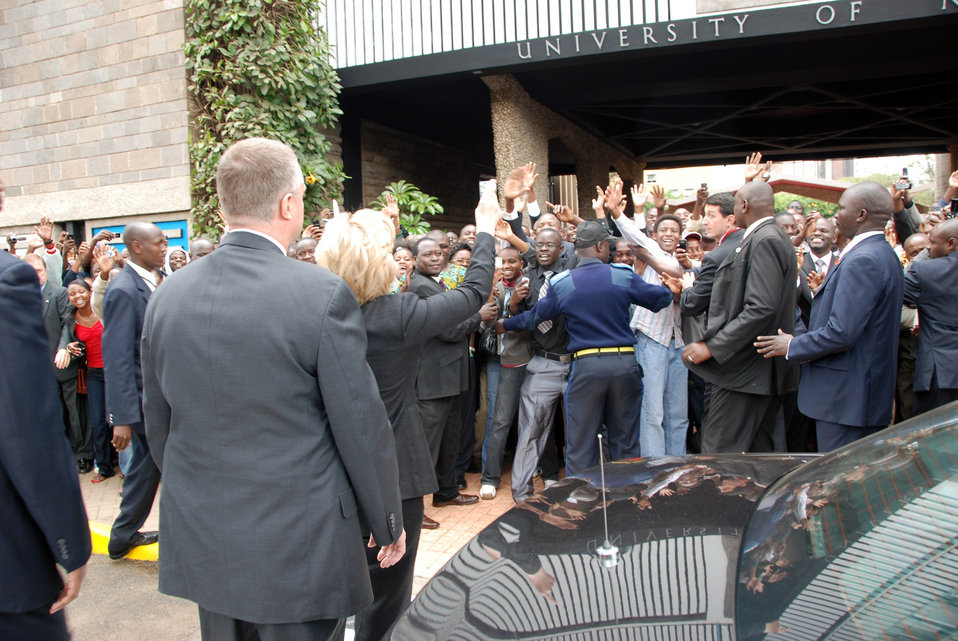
Secretary Clinton Visits Nairobi University

A cheering crowed greets U.S. Secretary of State Hillary Rodham Clinton after to a town hall meeting at the University of Nairobi in Nairobi, Kenya August 6, 2009.